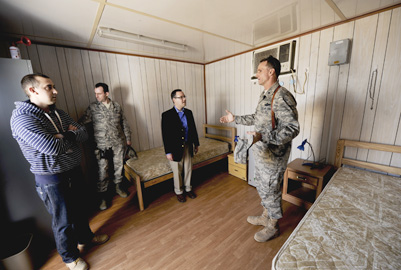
Assistant Secretary of Air Force visits Baghdad

Brig. Gen. Anthony Rock shows off a containerized-housing unit to Daniel Ginsberg Jan. 21, 2011, at Sather Air Base, Iraq. Mr. Ginsberg toured Iraq to discuss the Air Force's progress in the drawdown of U.S. forces in country. General Rock is the 321st Air Expeditionary Wing commander and Iraq Training and Advisory Mission - Air director, and Mr. Ginsberg is the Assistant Secretary of the Air Force for Manpower and Reserve Affairs.